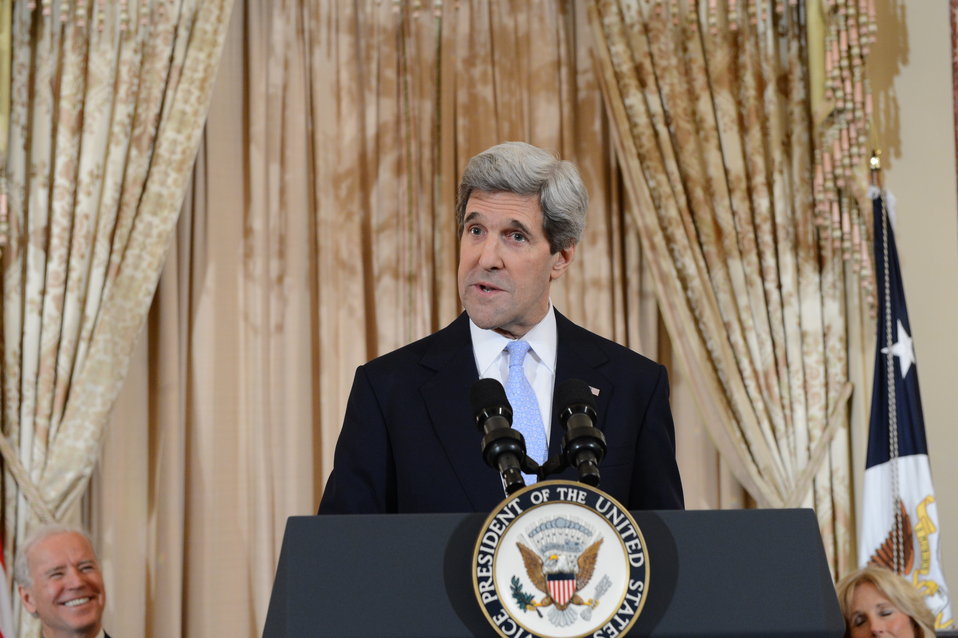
Secretary Kerry Delivers Remarks

U.S. Secretary of State John Kerry delivers remarks during his ceremonial swearing-in at the U.S. Department of State in Washington, D.C., February 6, 2013. Also pictured are U.S. Vice President Joe Biden, left, and Dr. Jill Biden, right.